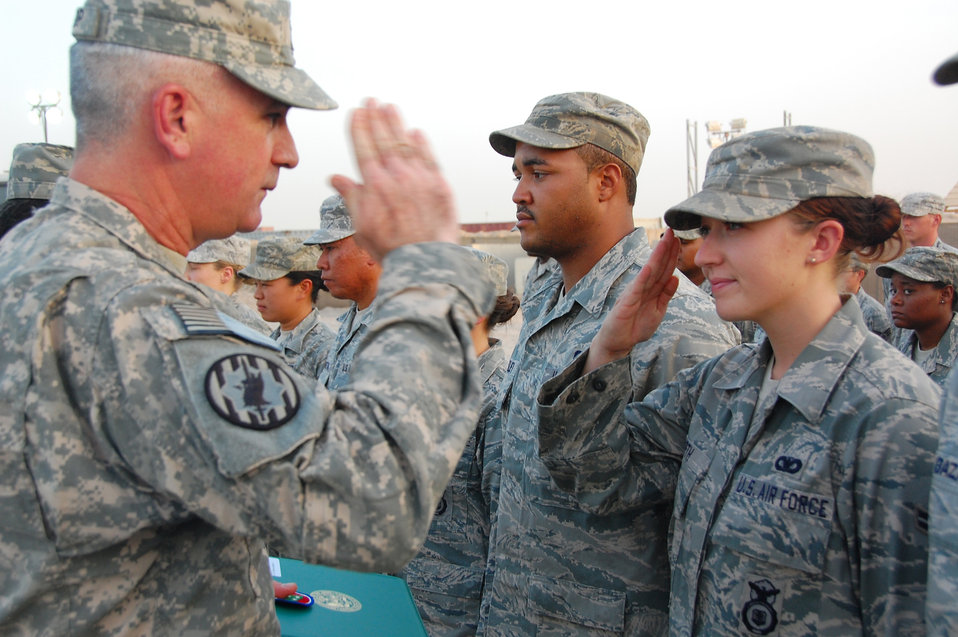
Airmen hand over visitation operations at Camp Bucca

Airman 1st Class Jordan Barth renders a salute to Army Lt. Col. Brad Bishop after receiving a certificate of appreciation during an end-of-tour ceremony Aug. 10 at Camp Bucca, Iraq. More than 120 Airmen from the 887th Expeditionary Security Forces were recognized for their work in visitation operations while deployed here. Airman Barth, an 887th ESFS controller, is deployed from Schreiver Air Force Base, Colo. Colonel Bishop is the 168th Military Police Battalion commander.